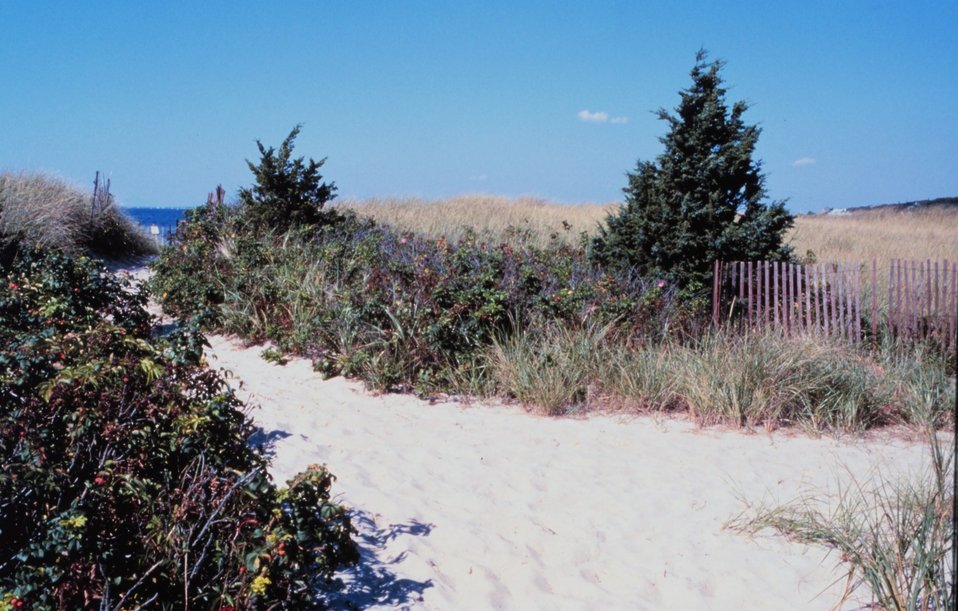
Beach on Buzzards Bay, West Falmouth